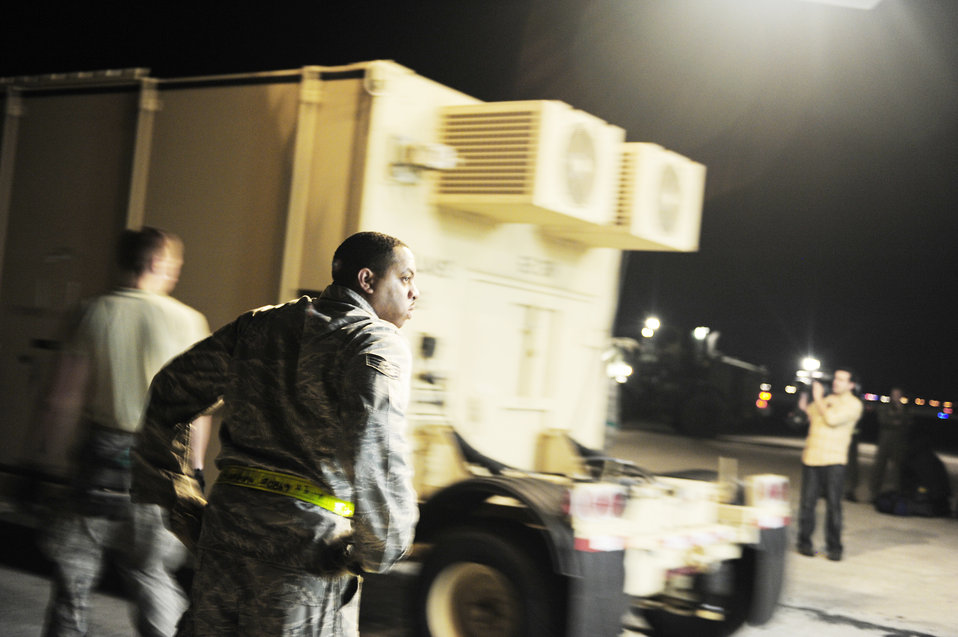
Haiti Relief Operations

Airmen from the 621st Contingency Response Wing at Joint Base McGuire-Dix-Lakehurst, N.J., off load cargo from a C-17 Globemaster III, Jan. 15, 2010, at the airport in Port-au-Prince to support relief efforts for Haiti in the aftermath of the devastating earthquake.